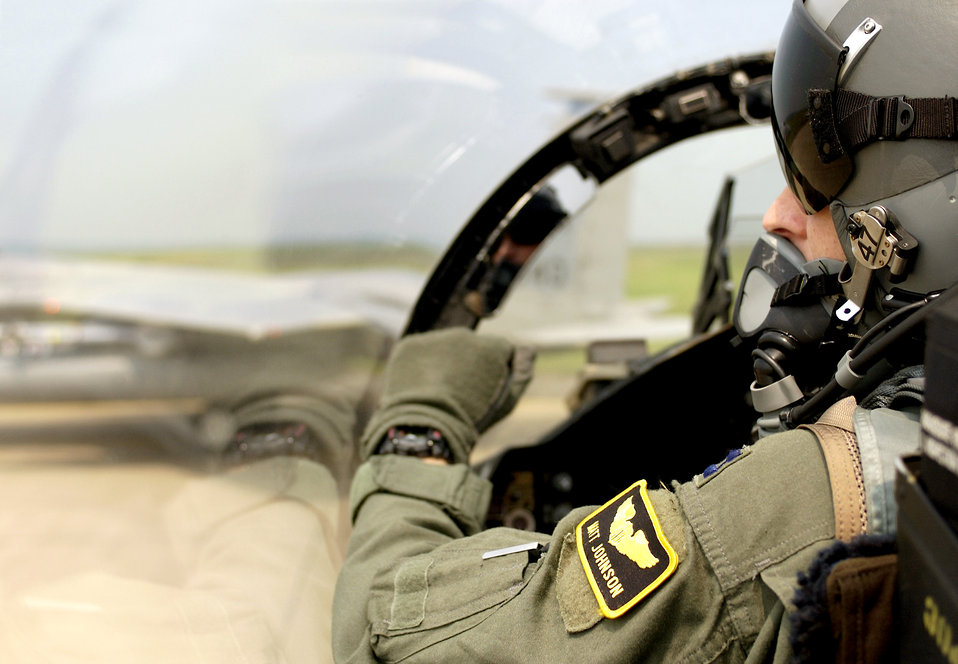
Sky patrol

LANGLEY AIR FORCE BASE, Va. -- Capt. Matt Johnson taxis out to fly a combat air patrol mission from here July 1. Pilots patrolled the sky over the Washington, D.C., area providing presidential support during the Fourth of July weekend. Captain Johnson is an F-15 Eagle pilot with the 94th Fighter Squadron.